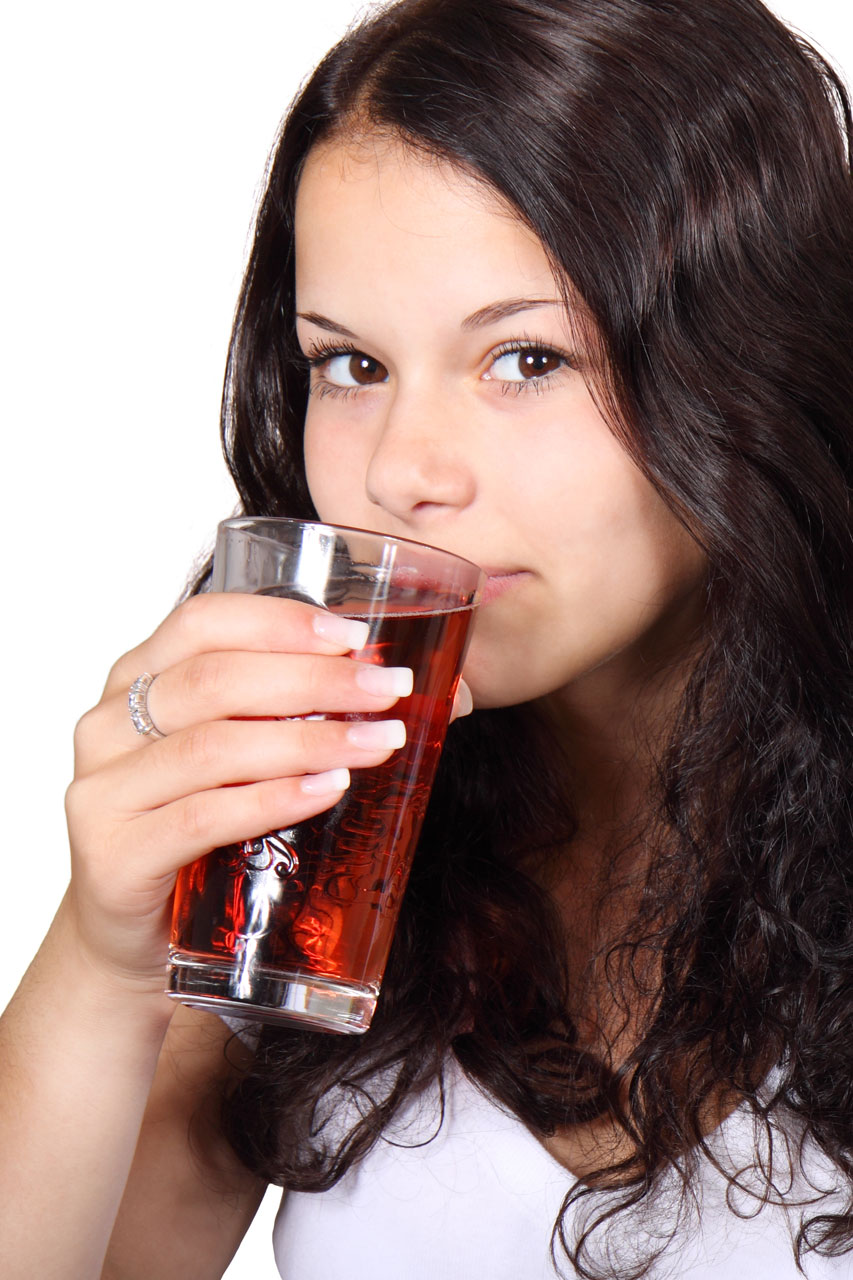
Drinking juice

Young woman drinking a glass of juice.